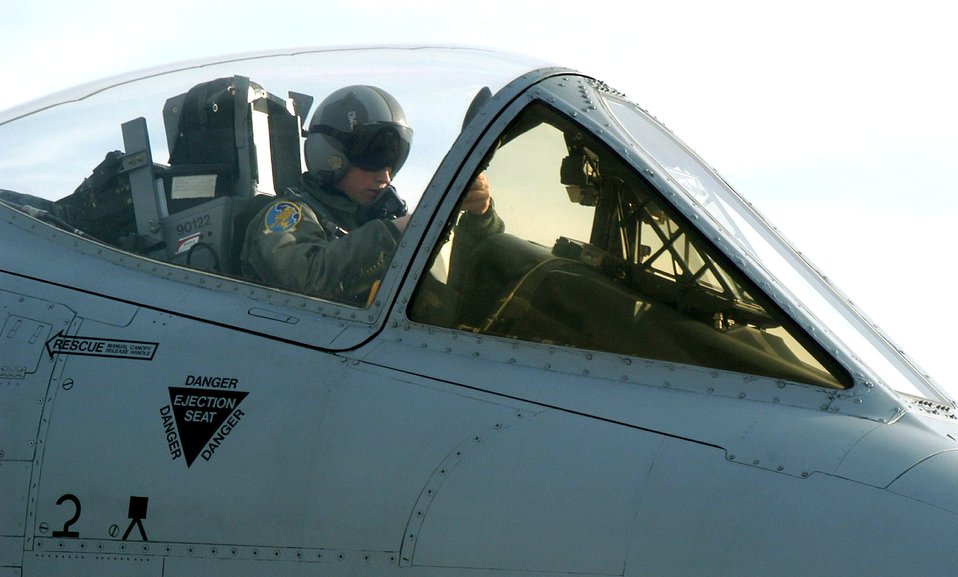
Whiteman Reserve wing teams up with Spangdahlem pilots

Capt. David Kirkendall, an A-10 Thunderbolt II pilot from Spangdahlem Air Base, Germany, prepares to taxi from the Air Force Reserve's 442nd Fighter Wing at Whiteman Air Force Base, Mo. The 442nd has teamed up with the 81st Fighter Squadron from Spangdahlem to provide training flights and upgrade training to active-duty pilots for the next three months.